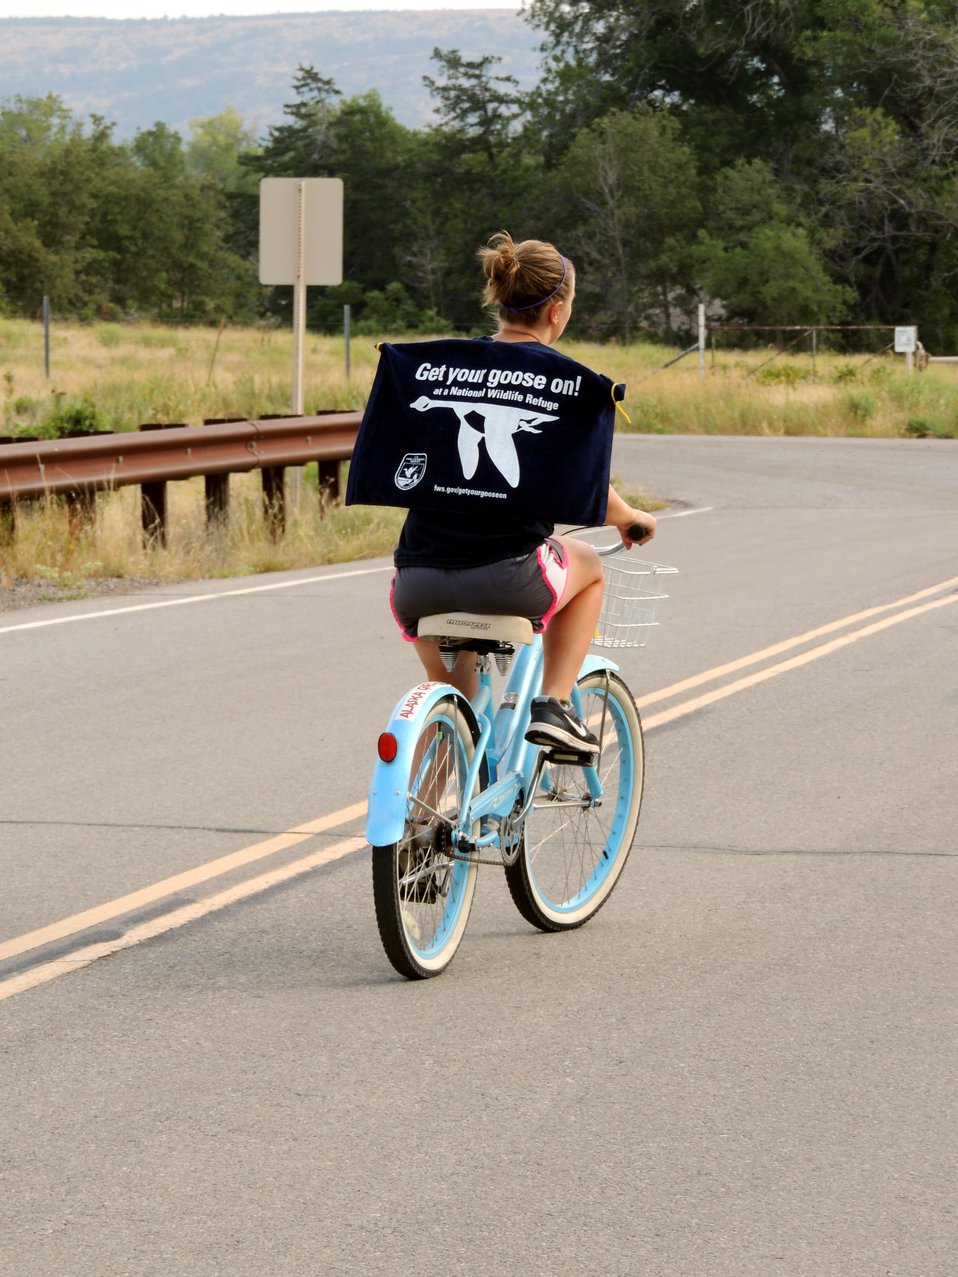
Get Your Goose On!

Wichita Mountains National Wildlife Refuge in Oklahoma.